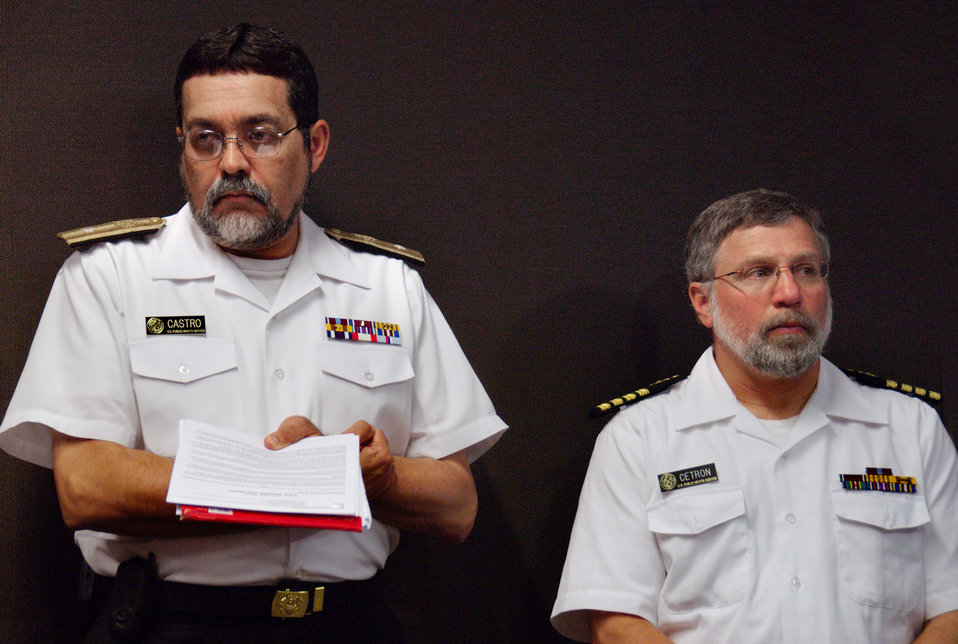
This 2007 image depicted Centers for Disease Control's, Director of the Division of Tuberculosis Elimination, Dr. Kenneth Castro (Lt), and Director of the Division of Global Migration and Quarantine, Dr. Martin Centron (Rt), preparing to present information at a press briefing regarding the organization's public health investigation into who may have been exposed to an extensively drug-resistant tuberculosis (XDR-TB) infected person. The information release included the action and steps that the CDC was taking in response to a case of XDR-TB in a United States citizen who'd undertaken international travel. XDR-TB is a recently defined subtype of a multi-drug resistant TB, which can cause severe illness and death.